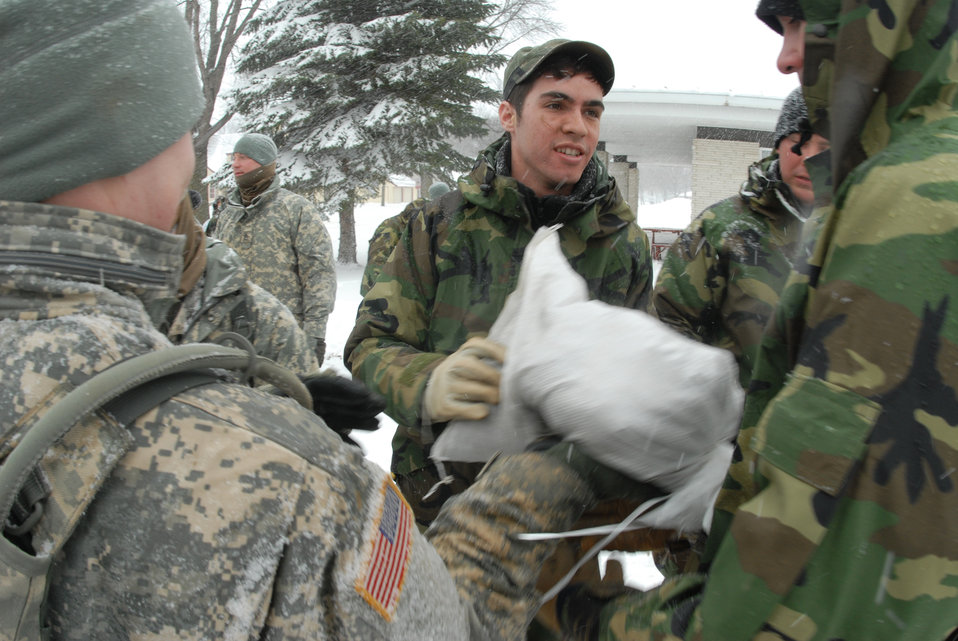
Human chain

Senior Airman Nathanael Baardson passes a sandbag along a human chain to build sandbag dikes March 25 in Fargo, N.D. Airman Baardson, a firefighter at Grand Forks Air Force Base, N.D., is part of an intense effort to block the rising flood waters of the Red River.